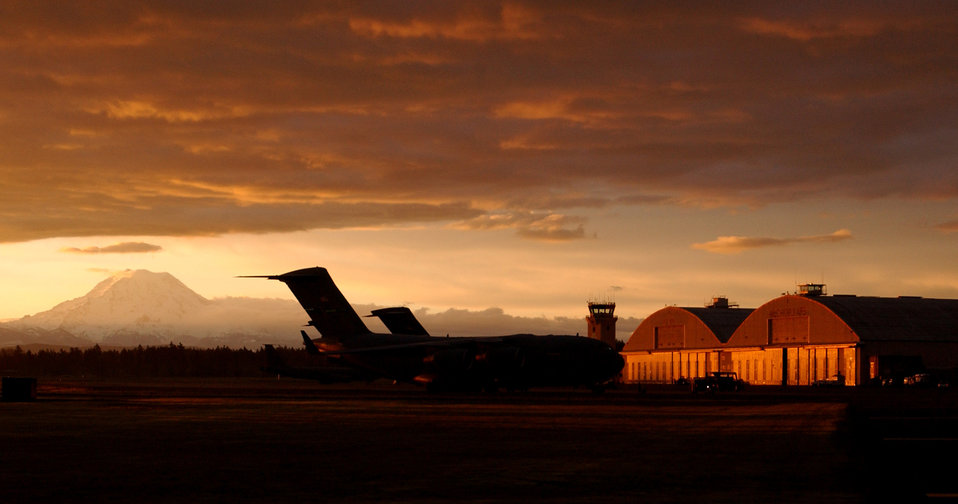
Sun rise

MCCHORD AIR FORCE BASE, Wash. -- Two C-17 Globemaster IIIs sit on the flightline here as the sun rises April 12.